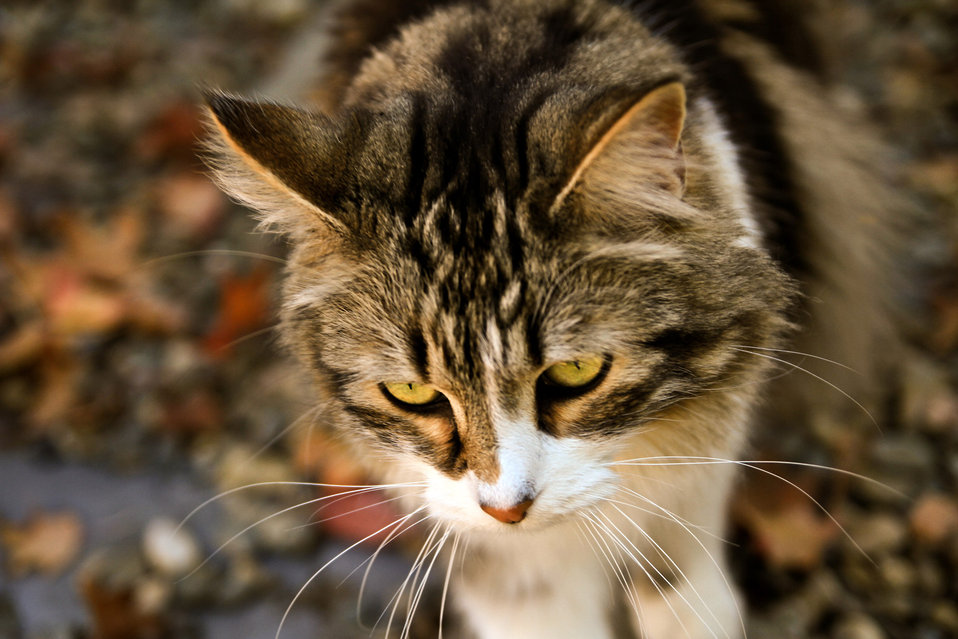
Cat hunting

A cat walking outside.